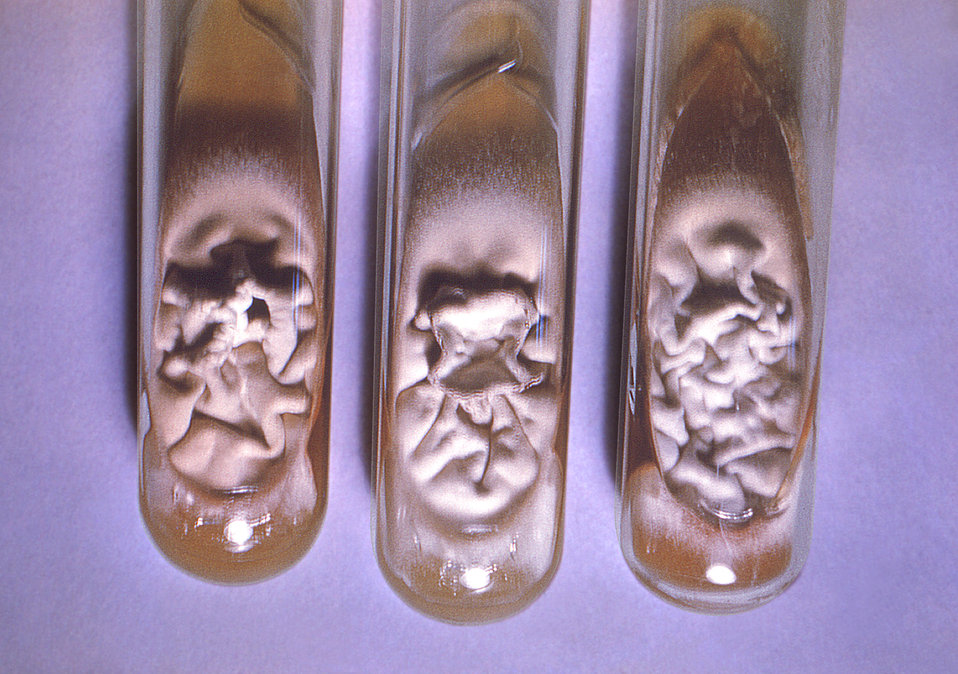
This image depicts three slant culture test tubes, all of which had been inoculated with Trichophyton tonsurans fungal organisms derived from a monospore culture. Of interest, were the differences in colonial morphology from one culture to the next, though the experimental circumstances were identical.